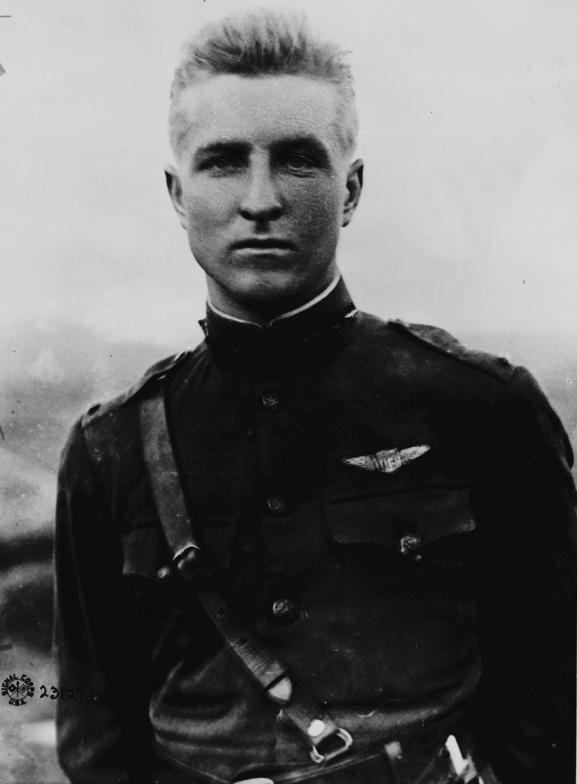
Lt. F rank Luke Jr.

Lt. Frank Luke was the second-ranking ace during Workd War I.